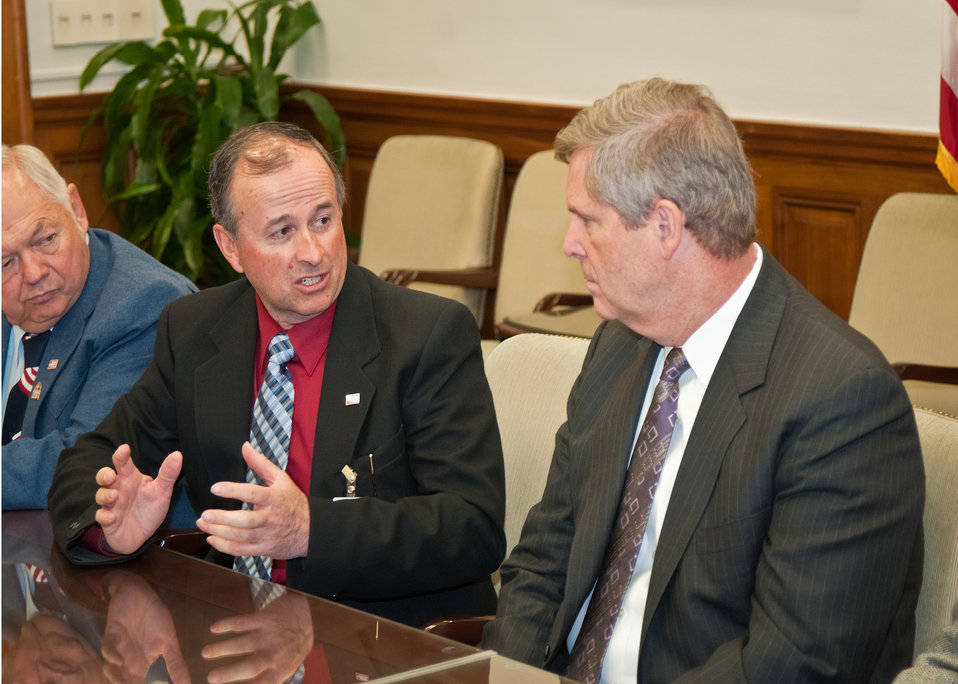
Dan Shawcroft (left), President of the Colorado Farm Bureau and Agriculture Secretary Tom Vilsack (right) discussed a variety of agricultural issues at the United States Department of Agriculture, Wednesday, March 30, 2011.